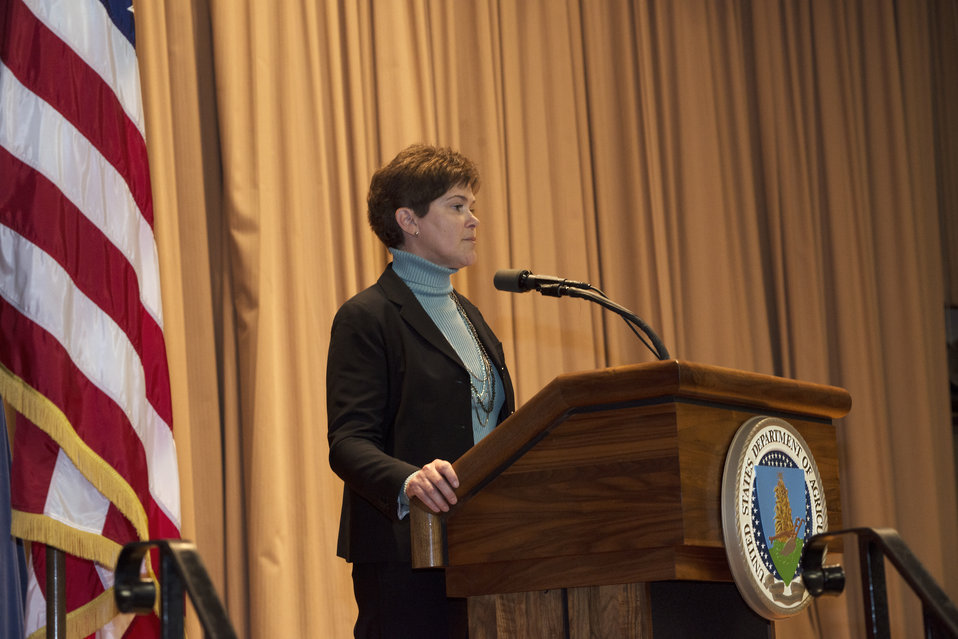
Agriculture Deputy Secretary Krysta Harden speaks at the U.S. Department of Agriculture’s (USDA) Women’s History Month Observance in the Jefferson Auditorium at USDA on Thursday, Mar. 13, 2014. The theme for this year’s observance is “Celebrating Women of Character, Courage, and Commitment”.